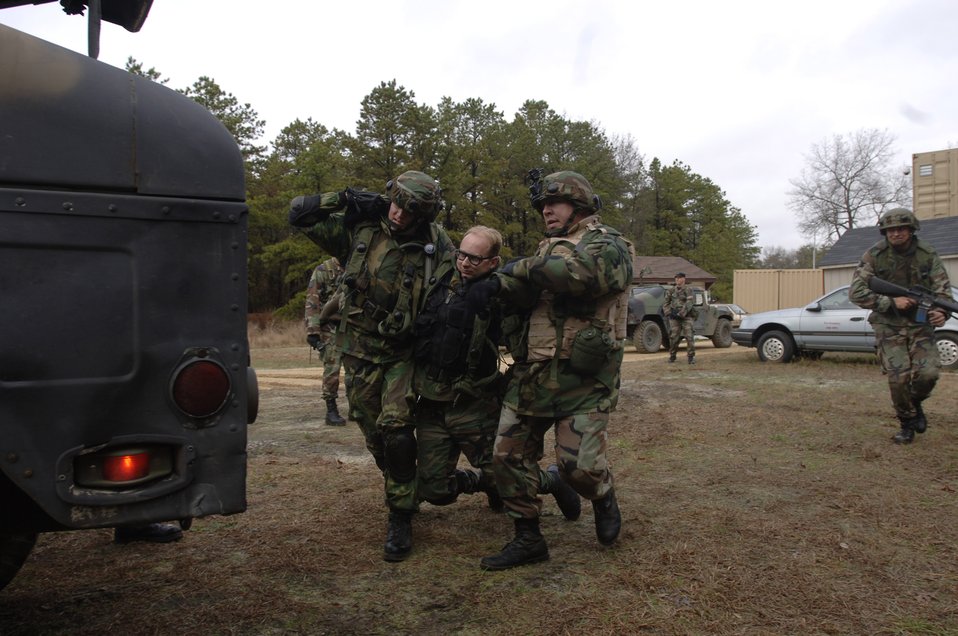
Air Force training makes Airmen safer, more aware

Capt. Mark McKellen and Capt. Ken Hall carry a